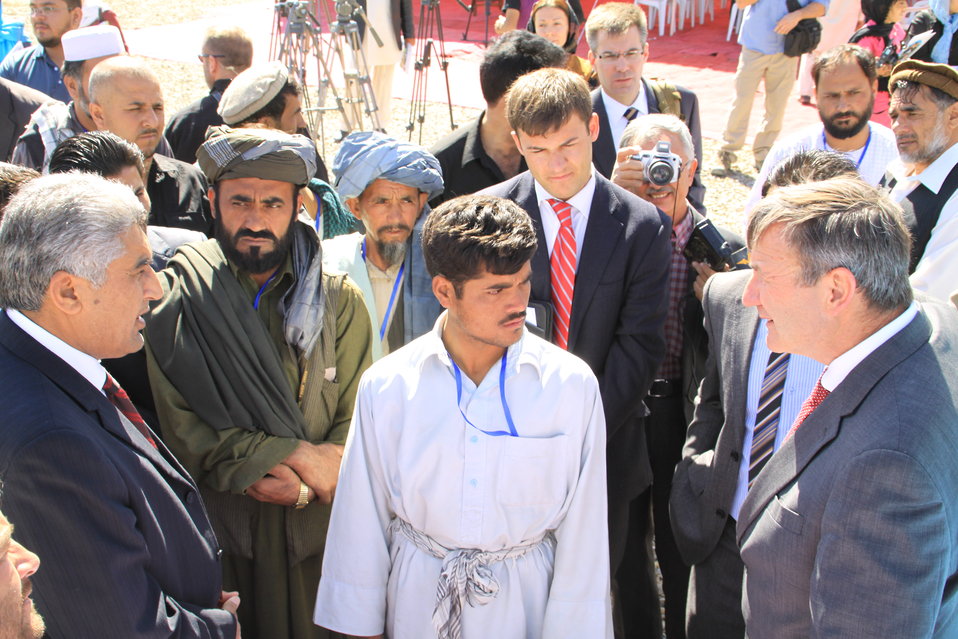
AVIPA Plus Wheat Seed Distribution 101005

US Ambassador Karl Eikenberry and USAID Acting Mission Director Kevin Brownawell joined the Minister of Agriculture, Irrigation and Livestock, H.E. Minister Mohammed Rahimi in signing a Memorandum of Understanding and distributing vouchers to area farmers for wheat and fertilizer.

US Ambassador Karl Eikenberry and USAID Acting Mission Director Kevin Brownawell joined the Minister of Agriculture, Irrigation and Livestock, H.E. Minister Mohammed Rahimi in signing a Memorandum of Understanding and distributing vouchers to area farmers for wheat and fertilizer.